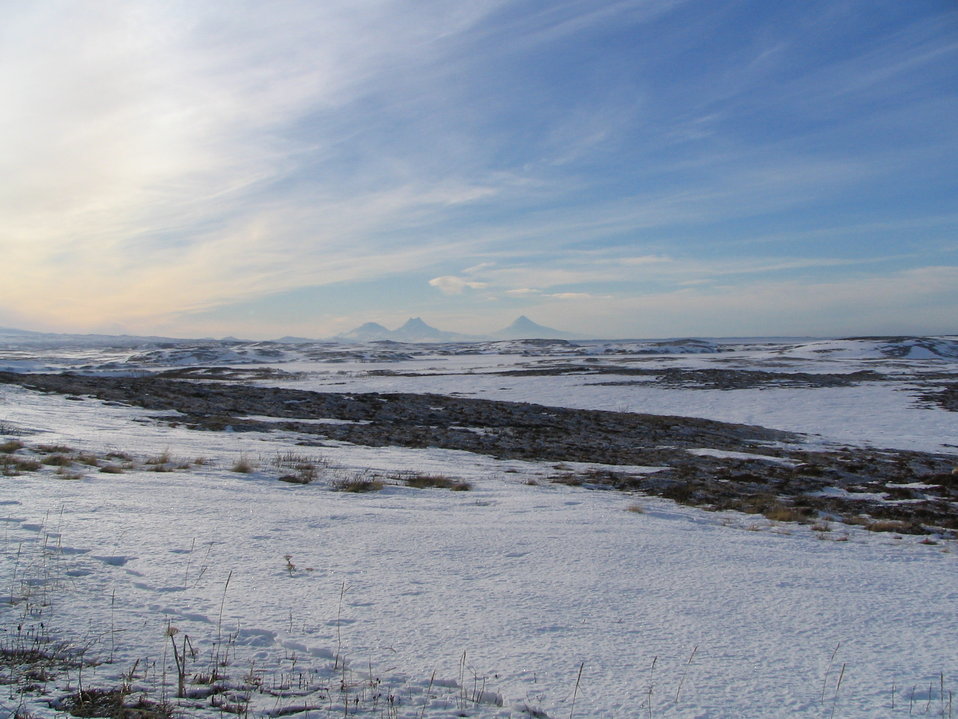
Glimpse of Unimak Volcanoes

Izembek National Wildlife Refuge